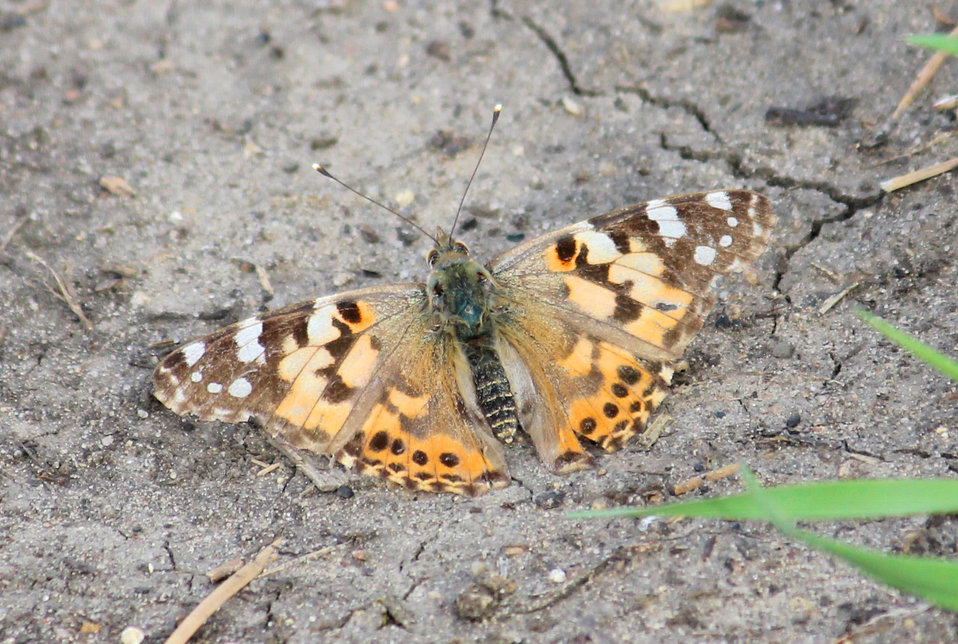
Painted Lady Butterfly

The larvae or caterpillars of this 'brush-footed' butterfly prefer to feed on thistles, mallows, and legumes.